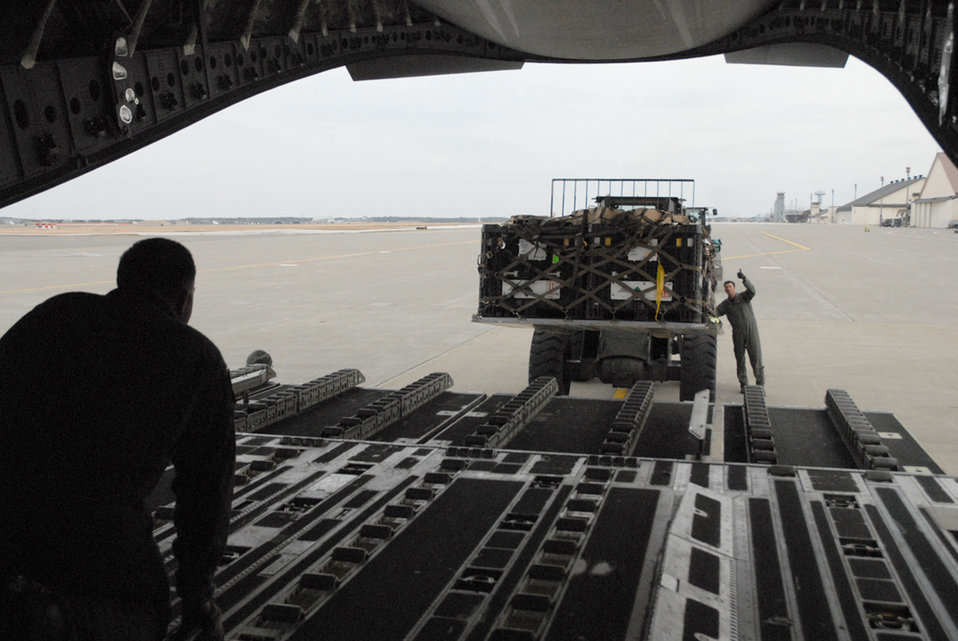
517th Airlift Squardron supports relief efforts in Japan

Joint Base Elmendorf-Richardson, Alaska -- Staff Sgt. Adam Koerner and Master Sgt. Stephen Mallory, both Air Force loadmasters stationed at the 517th Airlift Squadron, Joint Base Elmendorf-Richardson Alaska, marshal humanitarian relief pallets of USAID search and rescue gear into a C-17 Globemaster III destined for Yokota Air Base, Japan.